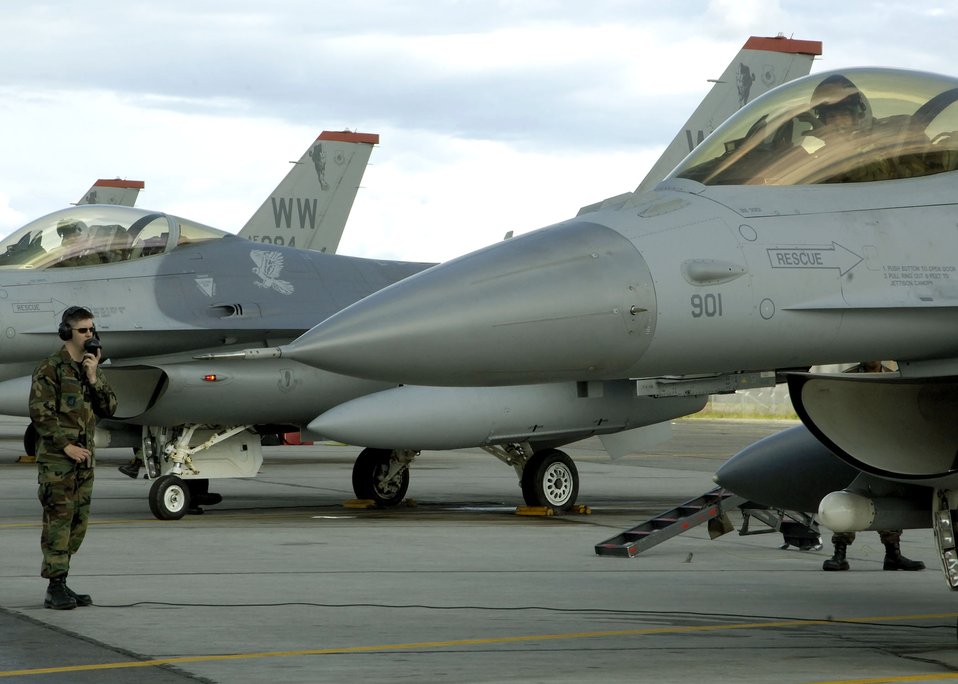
Misawa F-16 unit flying high at Cooperative Cope Thunder

First Lt. Ken Fravor performs pre-flight checks on an F-16 Fighting Falcon piloted by Lt. Col. Steve Williams, commander of the 13th Fighter Squadron. Lieutenant Fravor is also assigned to the 13th FS at Misawa Air Base, Japan. The squadron is participating in Cooperative Cope Thunder 06-3 at Elelson Air Force Base, Alaska.